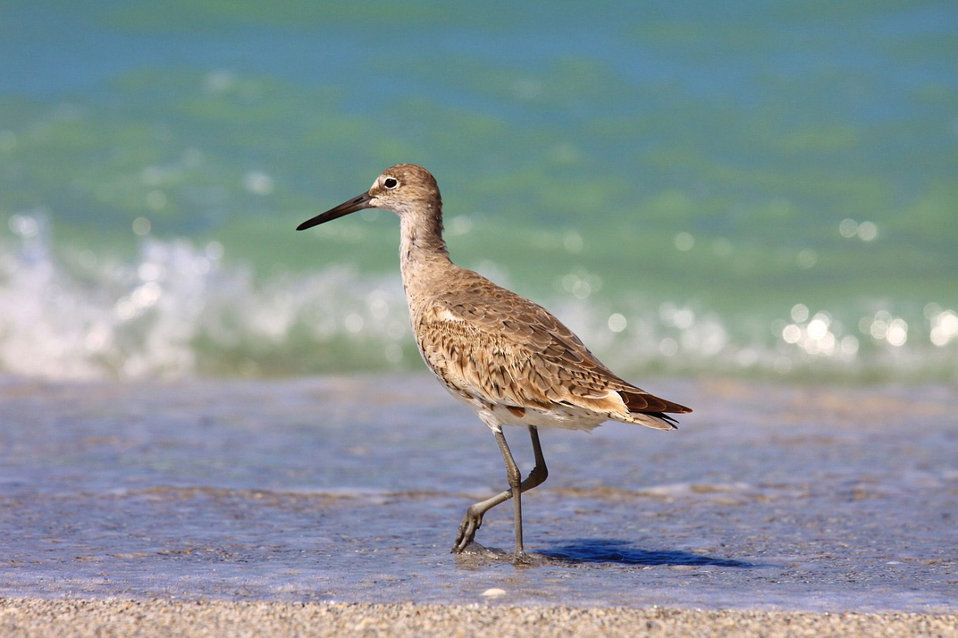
Little observer

Wild life of captiva island fl.